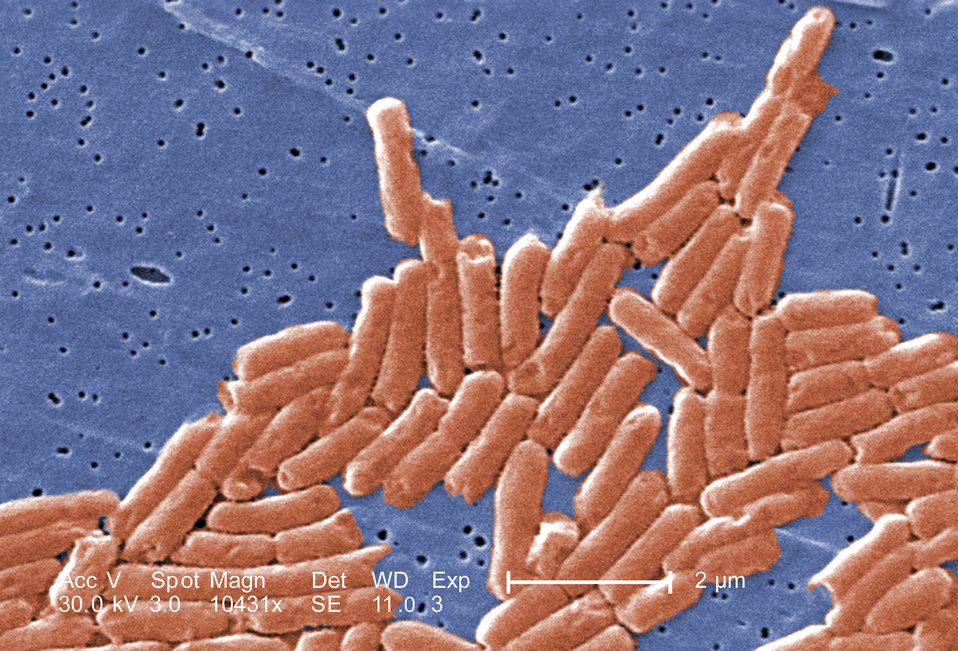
Under a high magnification of 10431X, half that of PHIL 10566, this colorized scanning electron micrograph (SEM) revealed a colony of Gram-negative bacilli, or rod-shaped Salmonella sp. bacteria. The genus Salmonella is a member of the taxonomic family, Enterobacteriaceae, and approximately 2000 serotypes of this genis are known to cause disease in human beings.How do people catch Salmonella?